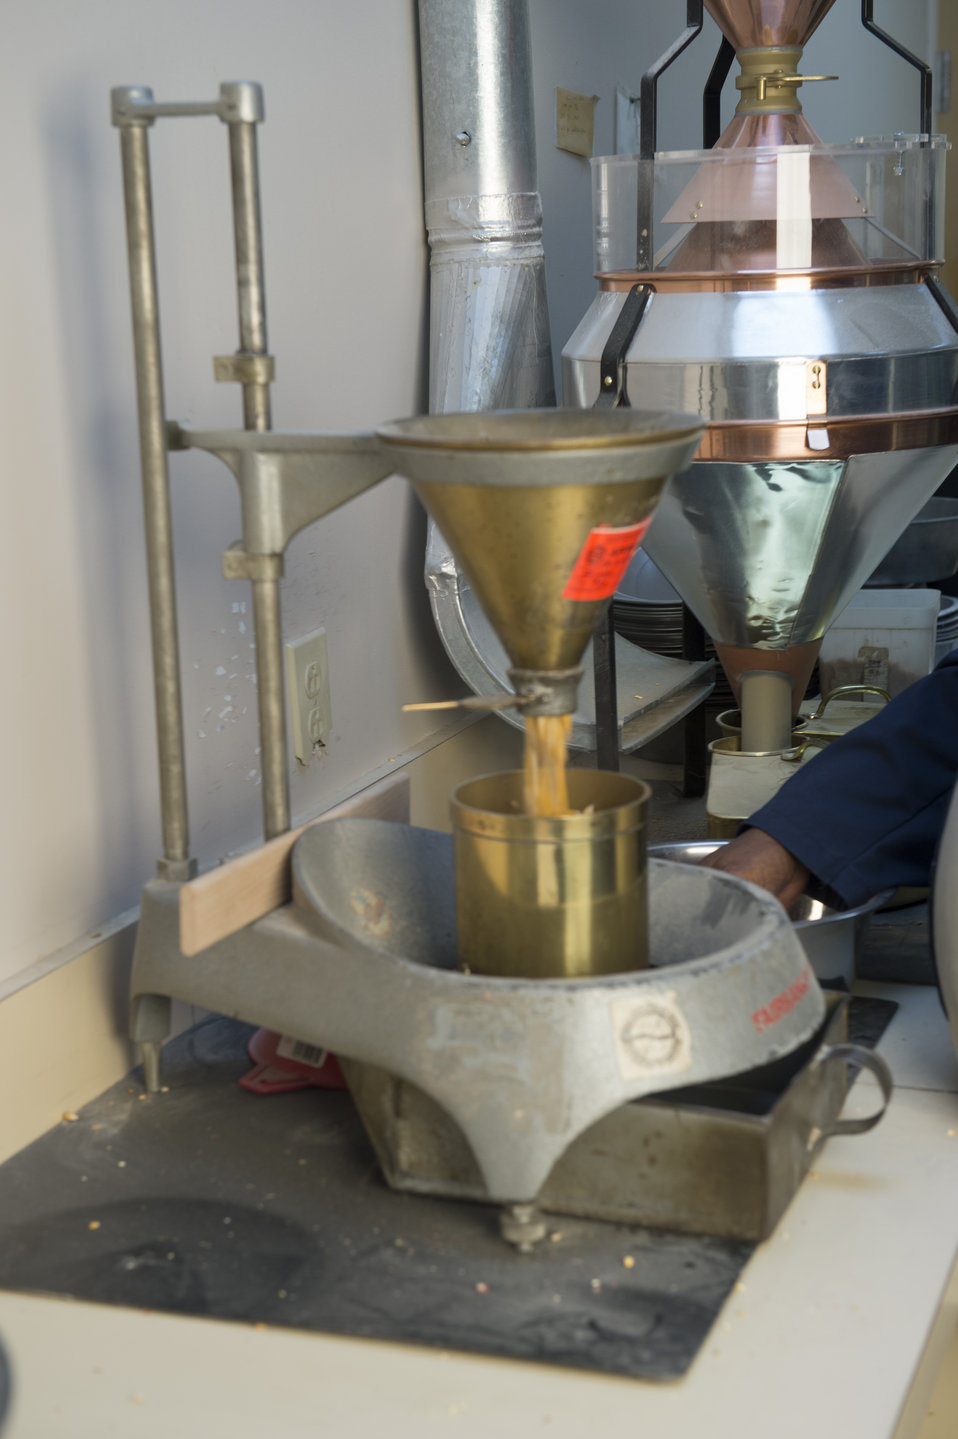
A U.S. Department of Agriculture (USDA) Grain Inspection, Packers and Stockyards Administration (GIPSA) Federal Grain Inspection Service (FGIS) scientist tests corn at the FGIS inspection laboratory in New Orleans, LA on Monday, Nov. 18, 2013.